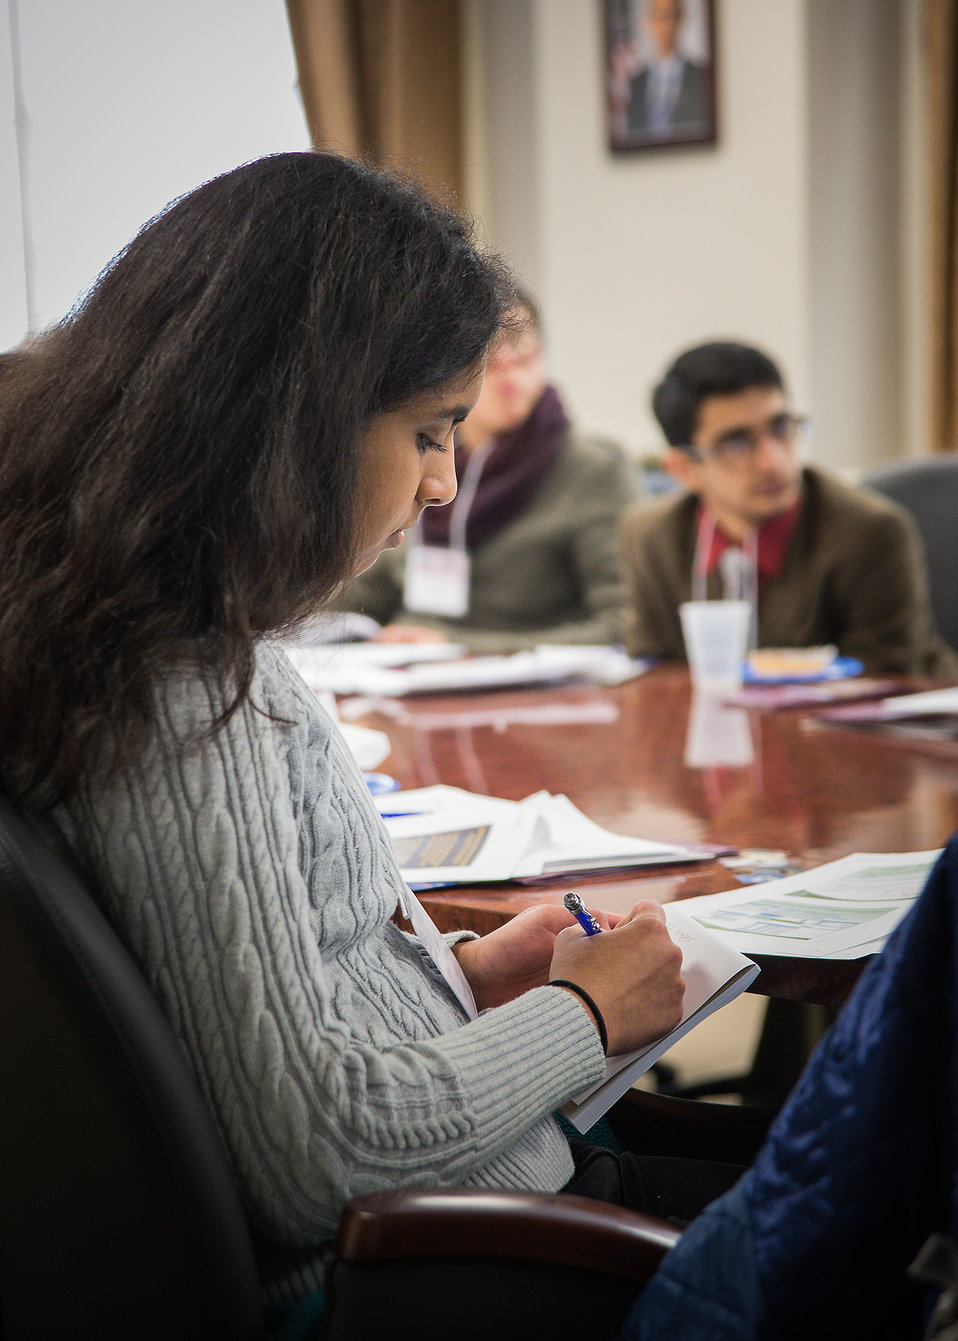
Teja Sathi, a student from Thomas Jefferson High School of Science and Technology in Alexandria, VA. listens to a speaker during the U.S. Department of Agriculture (USDA), Office of the Chief Information Officer (OCIO) IT Job Shadow Day, Tuesday, Mar. 25, 2014. The OCIO IT Job Shadow Day hosts students from local high schools in the Washington, D.C. area annually with IT professionals and agricultural specialists from a variety of mission areas at USDA.